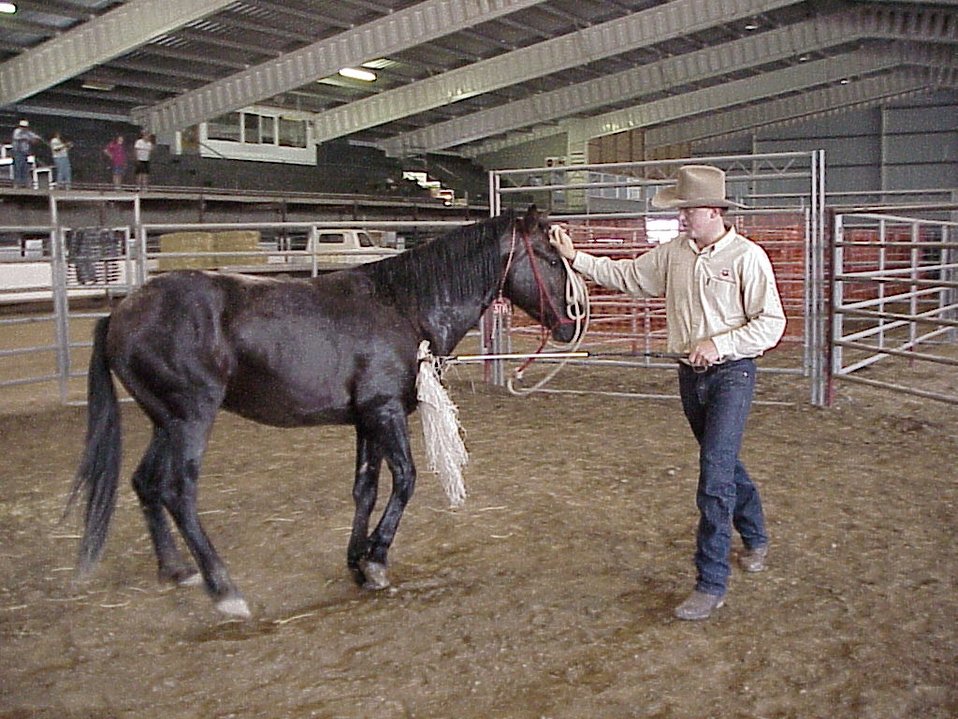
Horse Gentler Mario Johnson Lewiston Wild Horse and Burro Adoption Program Auction WHB indoor auction Cottonwood Field Office UCSC Upper Columbia Salmon Clearwater District